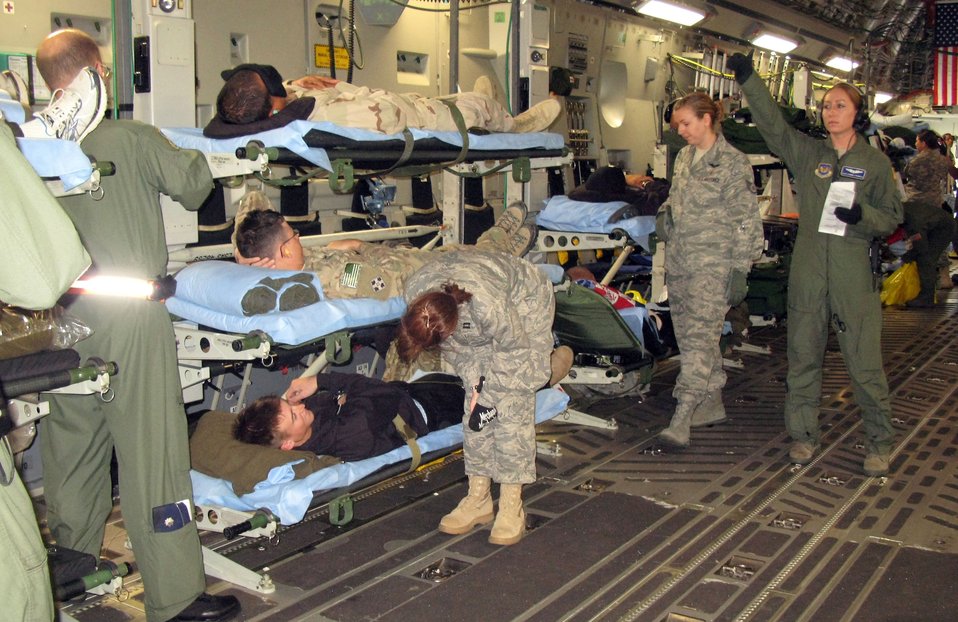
Air Force evacuation team carries wounded warriors home

An aeromedical evacuation crew makes final checks on wounded warriors aboard a C-17 Globemaster III aircraft at Ramstein Air Base, Germany, before an April 26, 2011, flight to Andrews Air Force Base, Md., to receive advanced-level care in the United States.